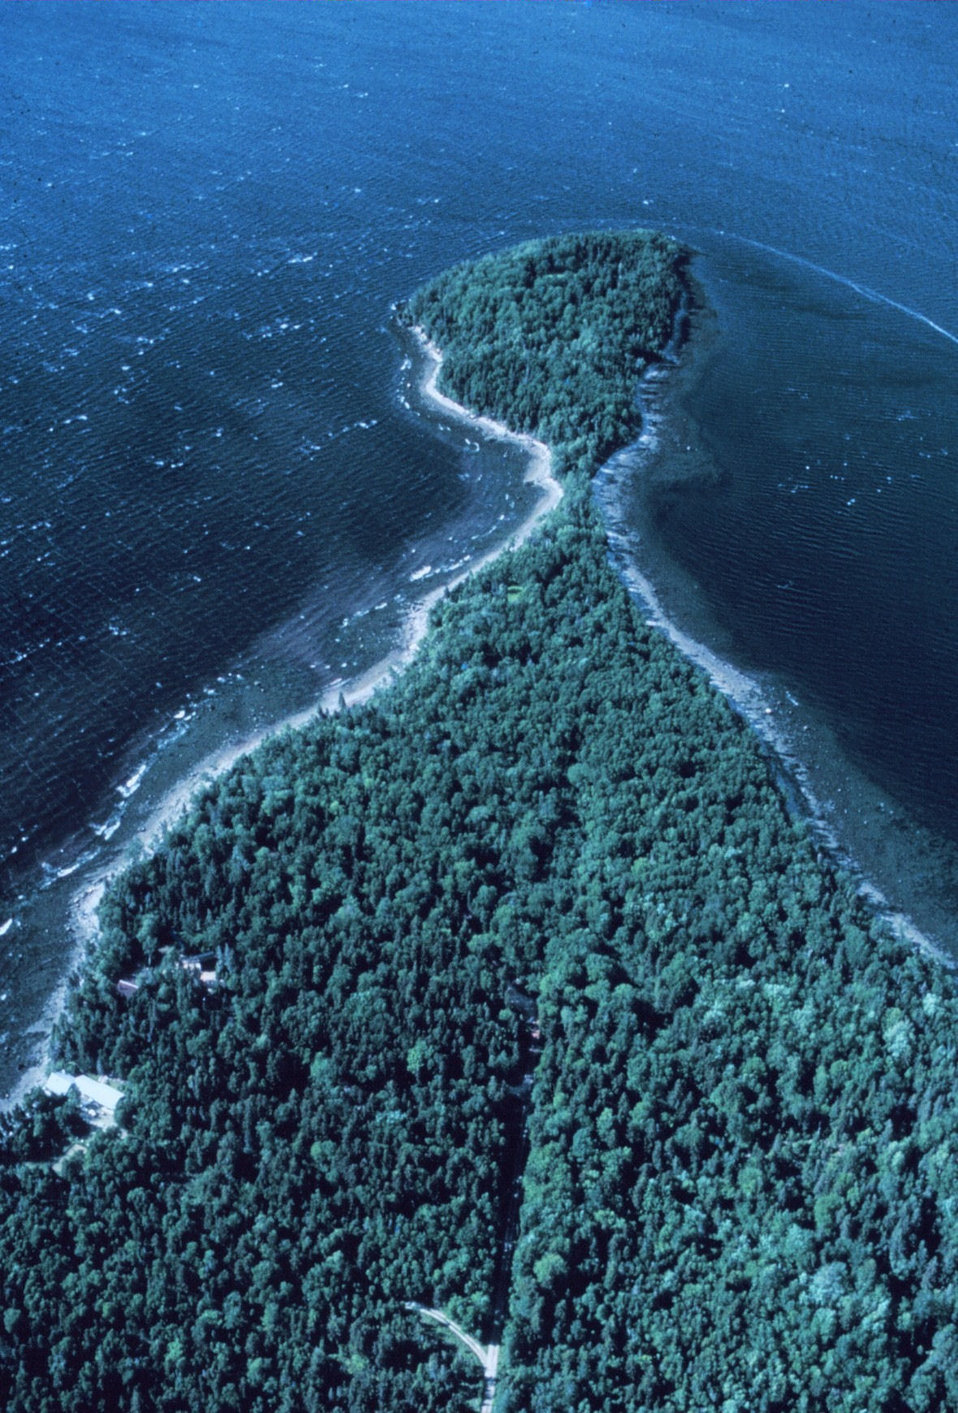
Apparently a tree-covered peninsula with a rocky shoreline